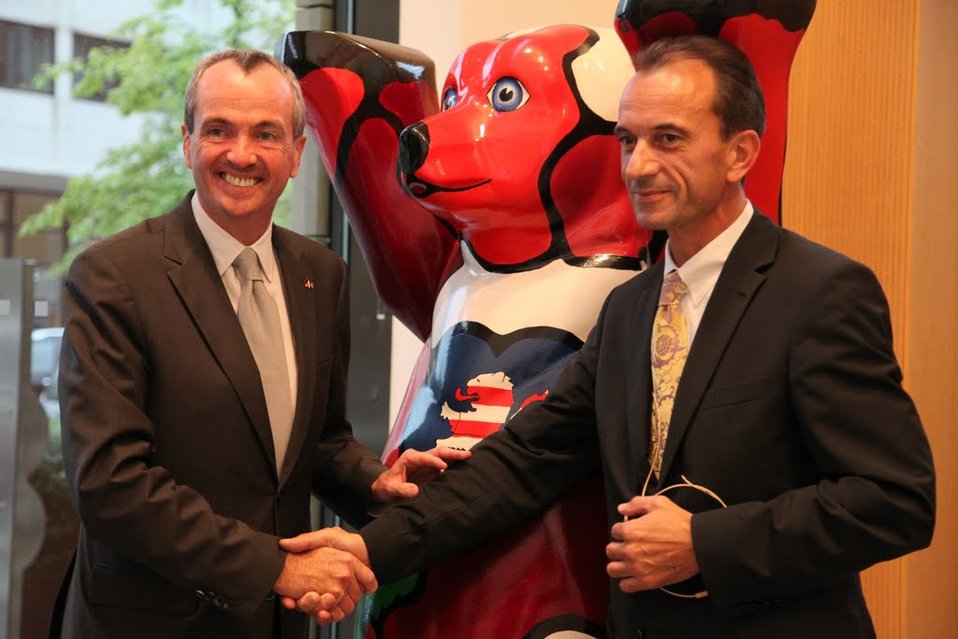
Ambassador Murphy Is Greeted By Minister Boddenberg

German Minister of State Michael Boddenberg welcomes U.S. Ambassador to Germany Philip D. Murphy at the Hessian State Representation in Brussels, Belgium, on September 14, 2010.